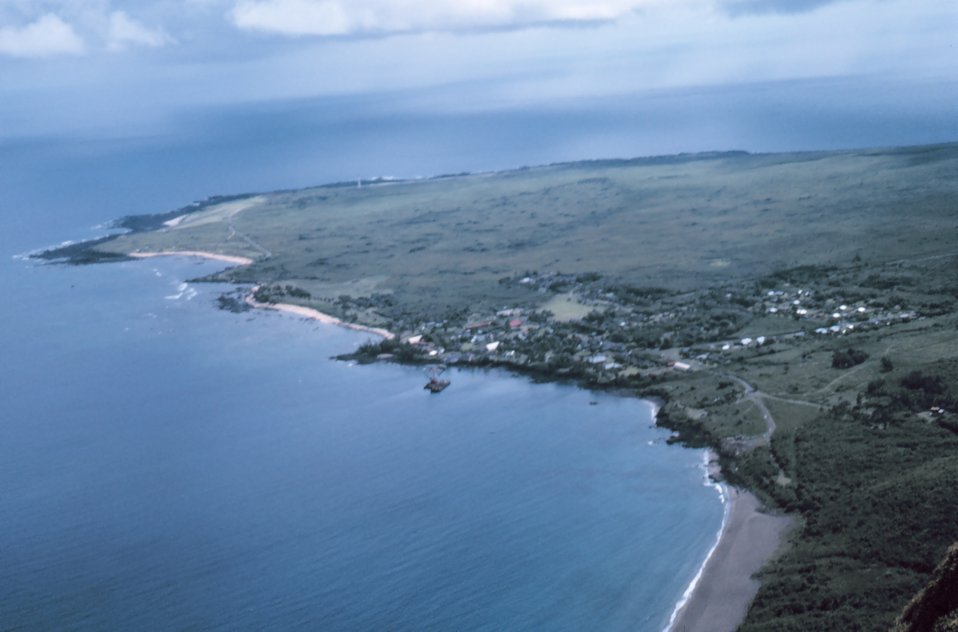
View of Kalapauna from lookout on Pali